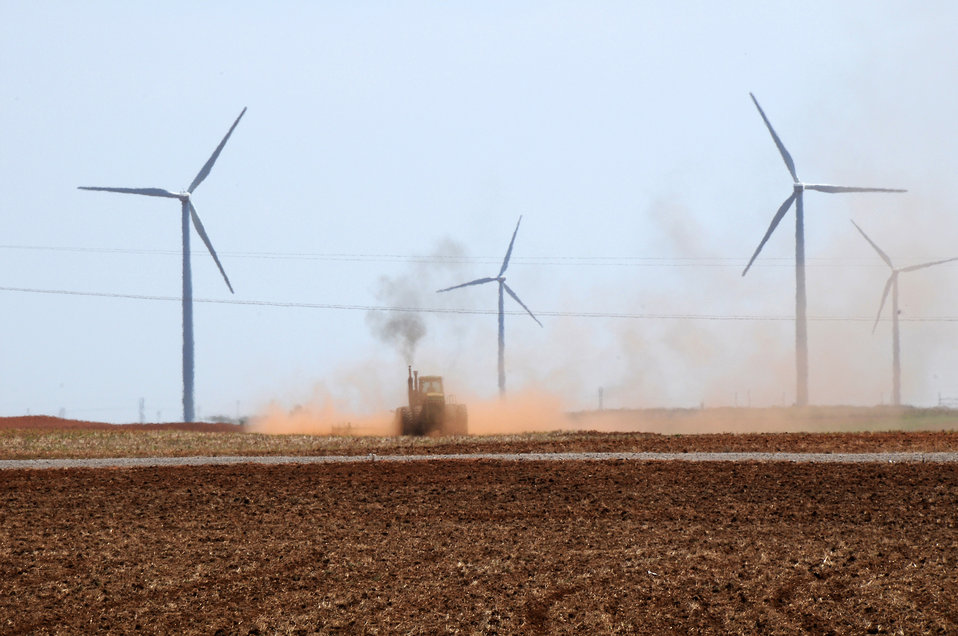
A tractor tills the soil among wind turbines in Oklahoma on August 13, 2009. A wind farm is a group of wind turbines in the same location used to produce electric power. A large wind farm may consist of several hundred individual wind turbines, and cover an extended area of hundreds of square miles, but the land between the turbines may be used for agricultural or other purposes.